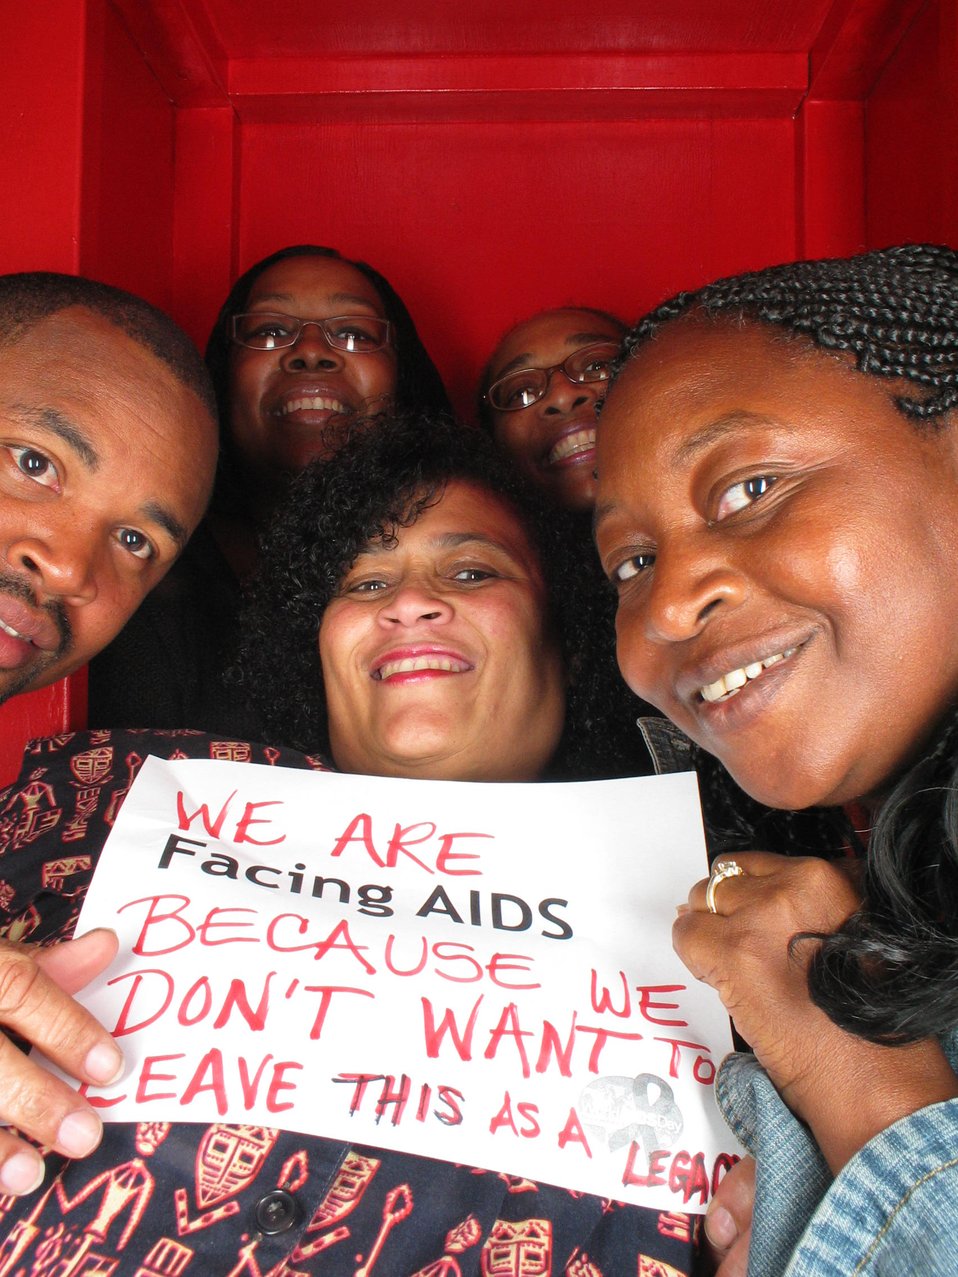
We are Facing AIDS because we don't want to leave this as a legacy